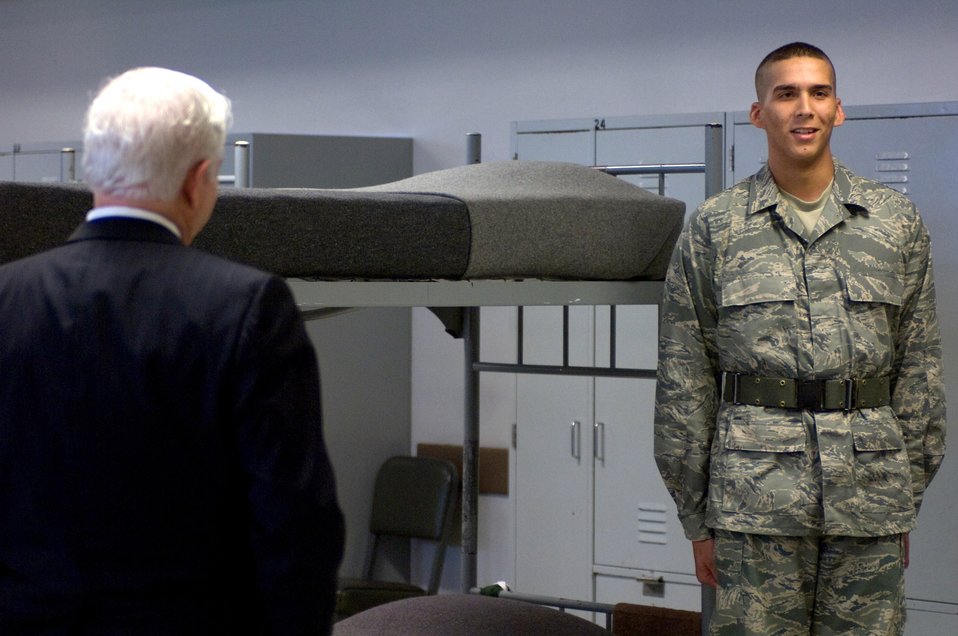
SECDEF visits Airmen, tour BMT facilities

Secretary of Defense Robert M. Gates speaks with a trainee during a tour of a dormitory during a visit to Lackland Air Force Base, Texas, July 24.